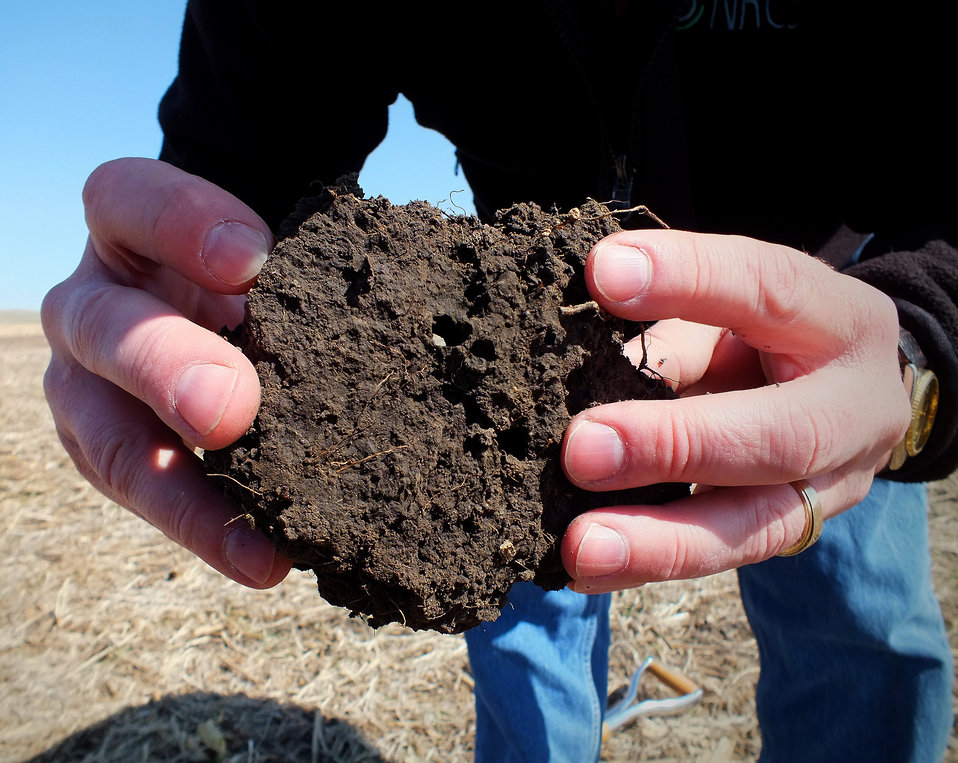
Solutions 1

Healthy soil retains water and is a key to the need to feed the world’s estimated 9 billion people by 2050.